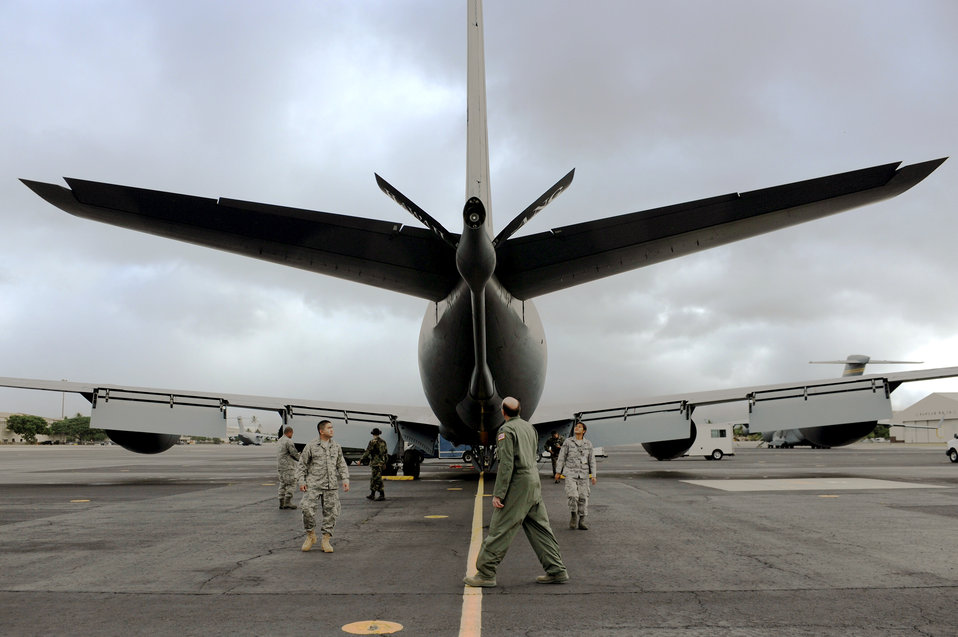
From the boom's viewpoint

Lt. Col. Gene Feller goes through a pre-flight inspection with members of the maintenance crew before a Total Force refueling mission Sept. 18, 2010, at Joint Base Pearl Harbor-Hickam, Hawaii. Colonel Feller is a pilot with the 203rd Air Refueling Squadron.